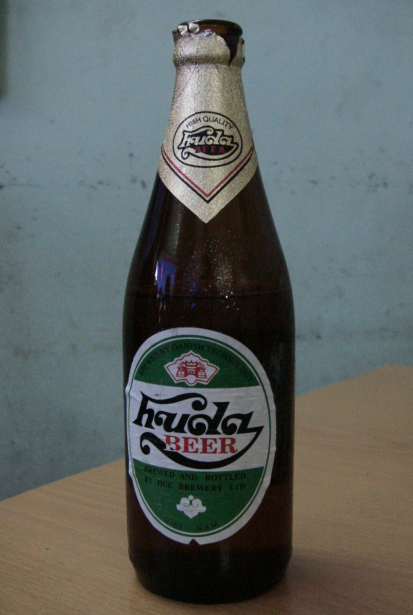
Tiếng Việt: Bia Huda, Huế A bottle of Huda beer, Hue, Vietnam.